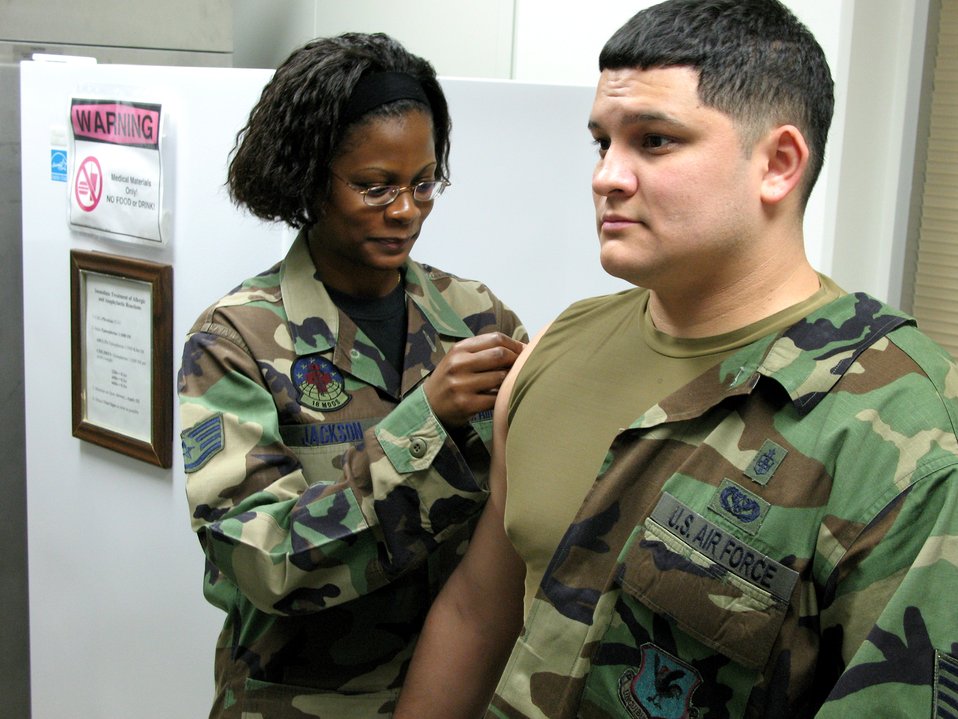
Anthrax vaccine becomes mandatory for some

Staff Sgt. Sakinah Jackson administers the Anthrax booster to Tech. Sgt. Raymond Garcia March 15 at Kadena Air Base, Japan. Sergeant Jackson is an allergy immunization technician and Sergeant Garcia is a technician. Both Airmen are assigned to the 18th Medical Group.